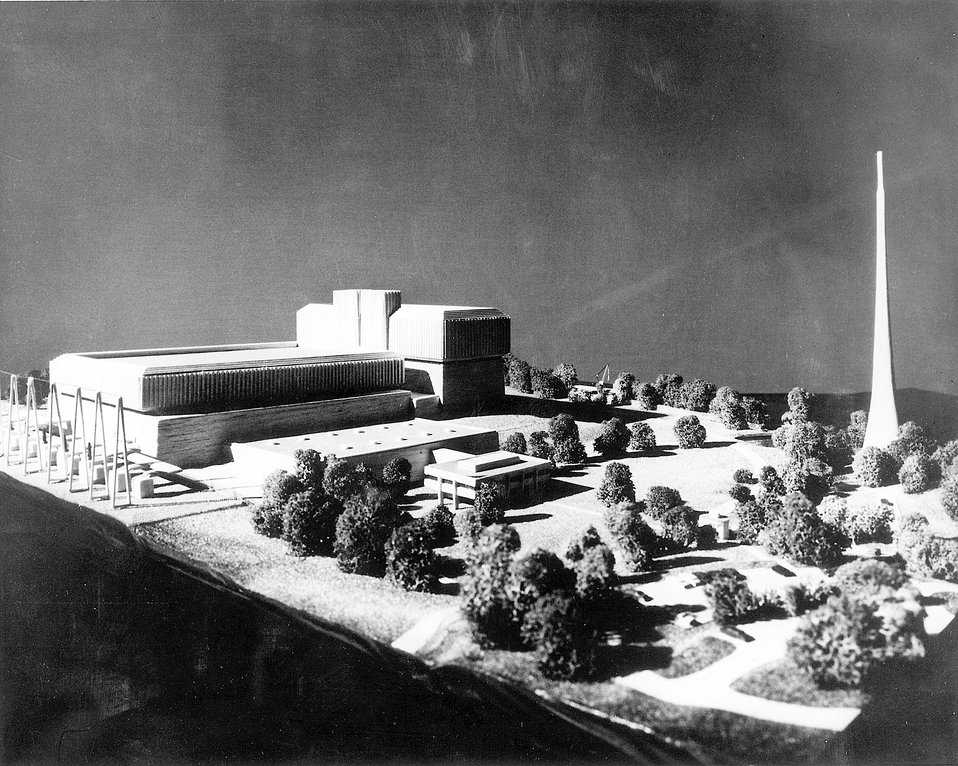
The site of TVA's Browns Ferry Nuclear Power Plant is on Wheeler Lake 10 miles northwest of Decatur, Alabama, and 10 miles southwest of Athens. Circa 1967.